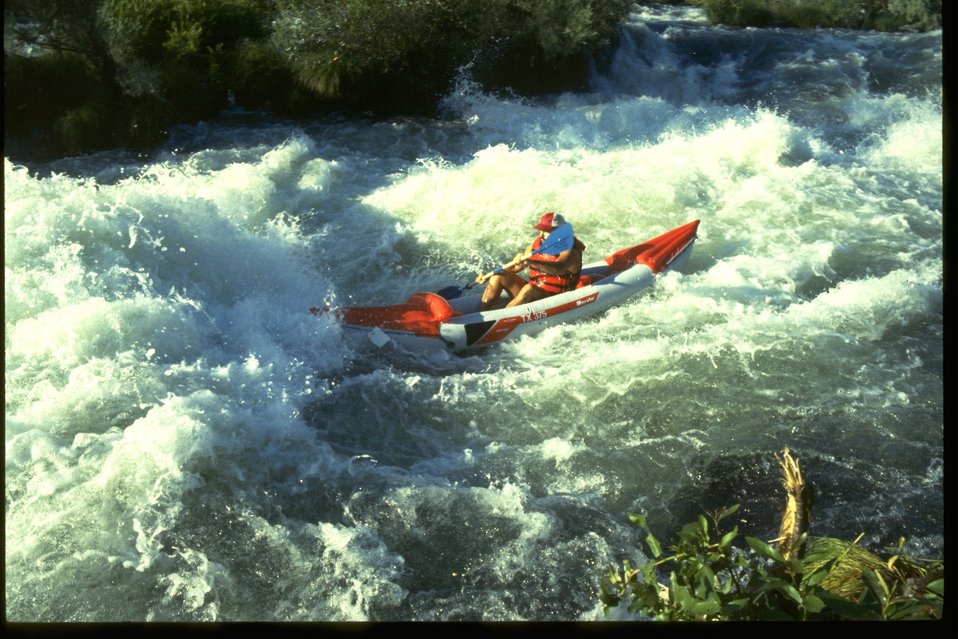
Kayaker at Nugget Falls on the Rogue River.